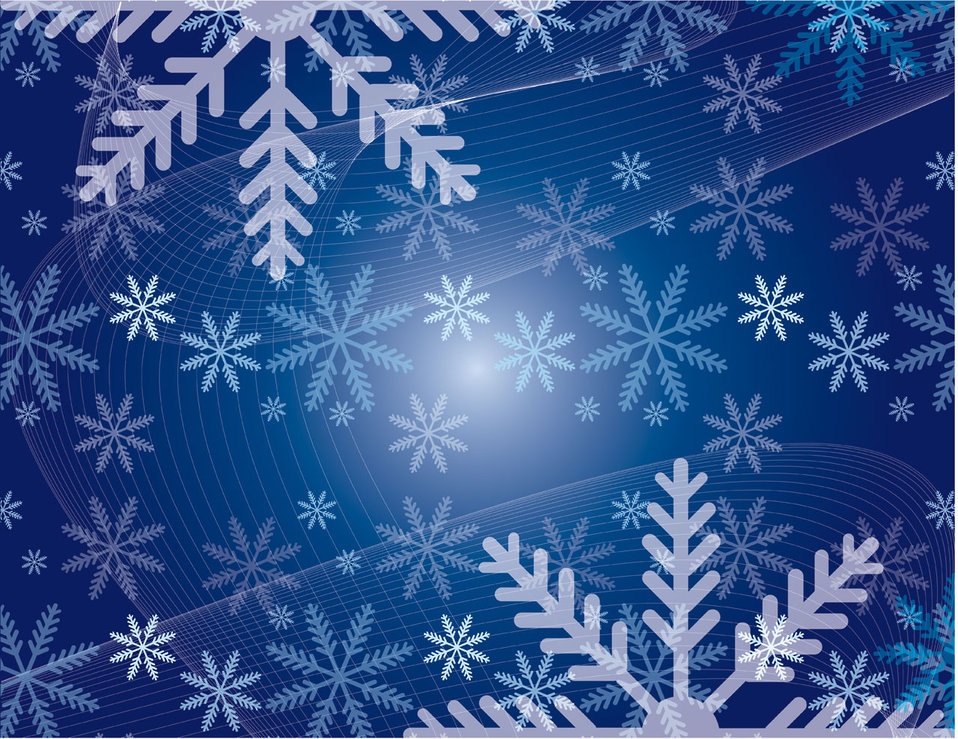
Snowy christmas background

Christmas blue background.